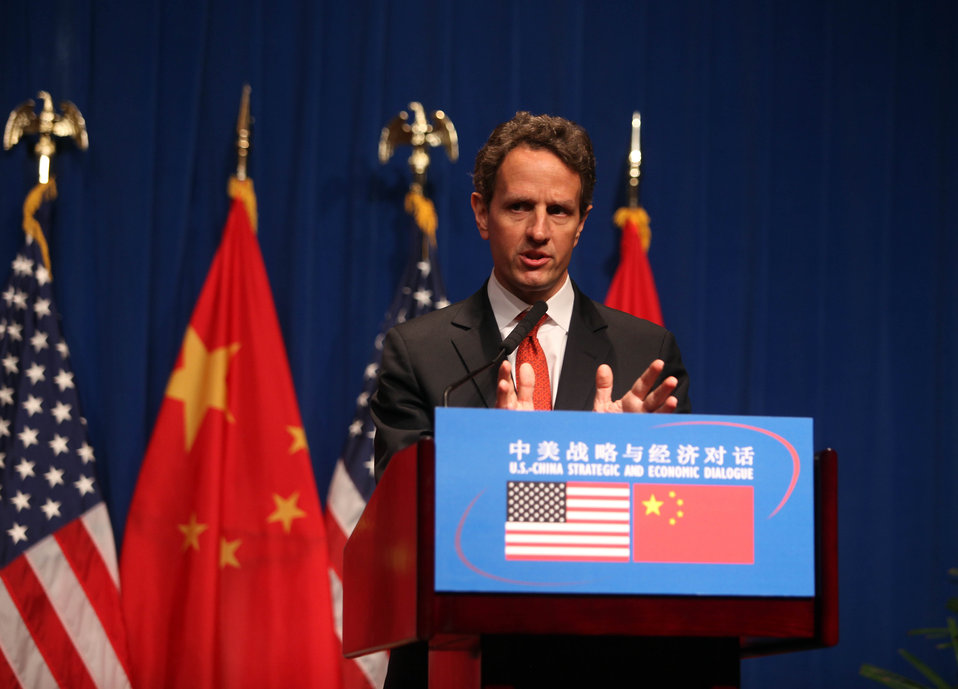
SandED 5/25/10

Secretary Geithner spoke at a press conference at the Grand Hyatt Hotel in Beijing.